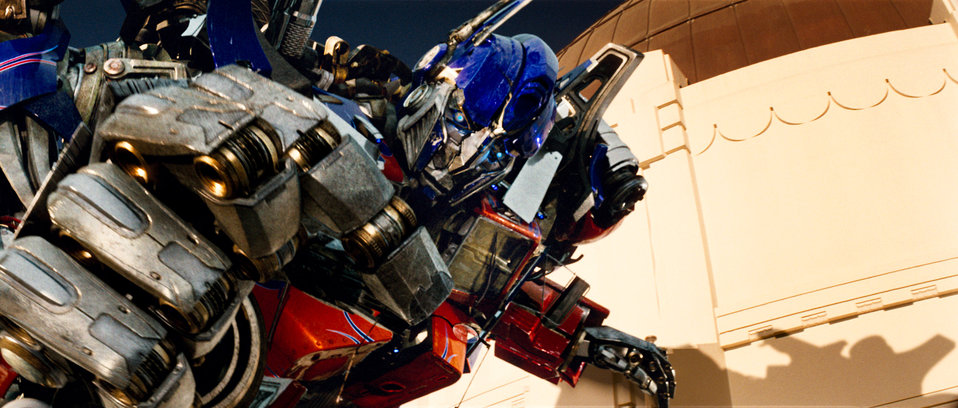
'Transformers' puts Airmen, aircraft on big screen

Optimus Prime, a member of an alien race, comes to help save the Earth in